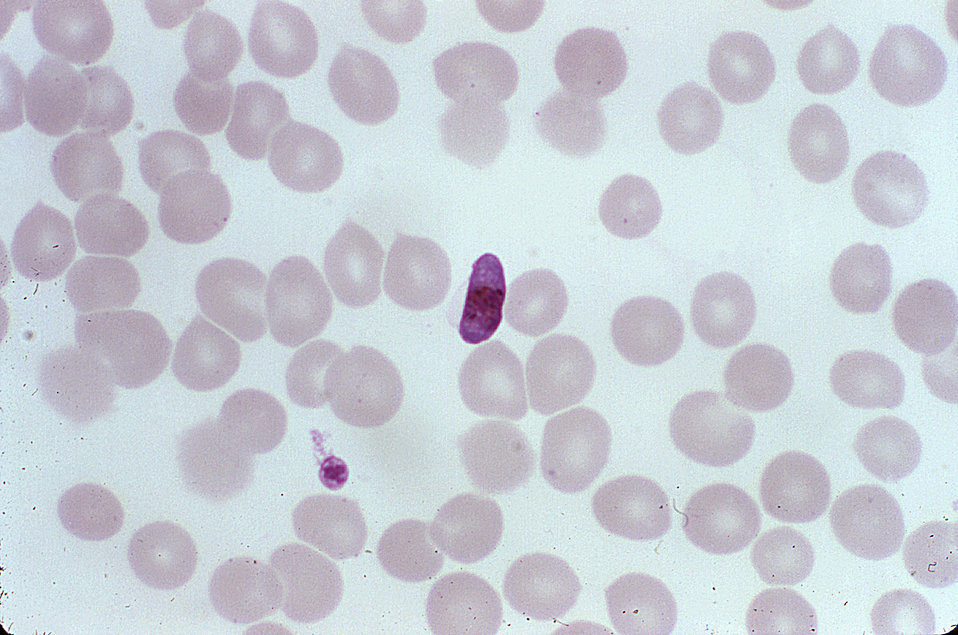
A photomicrograph of a blood smear containing a microgametocyte of the parasite Plasmodium falciparum.